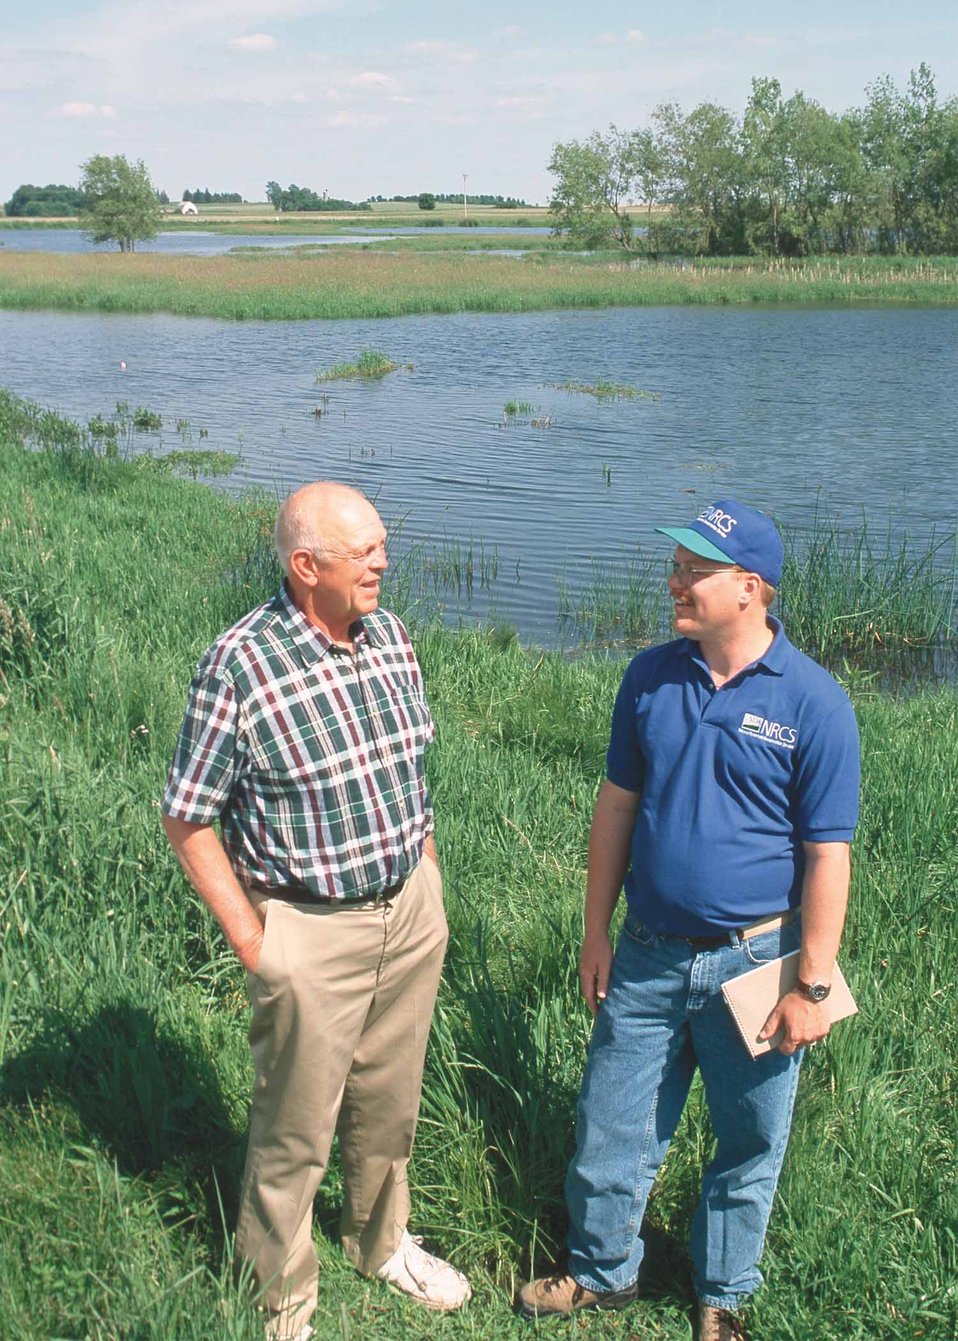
NRCS District Conservationist Mark Schutt (right) discuss recreation plans for Butler County, Iowa WRP site.